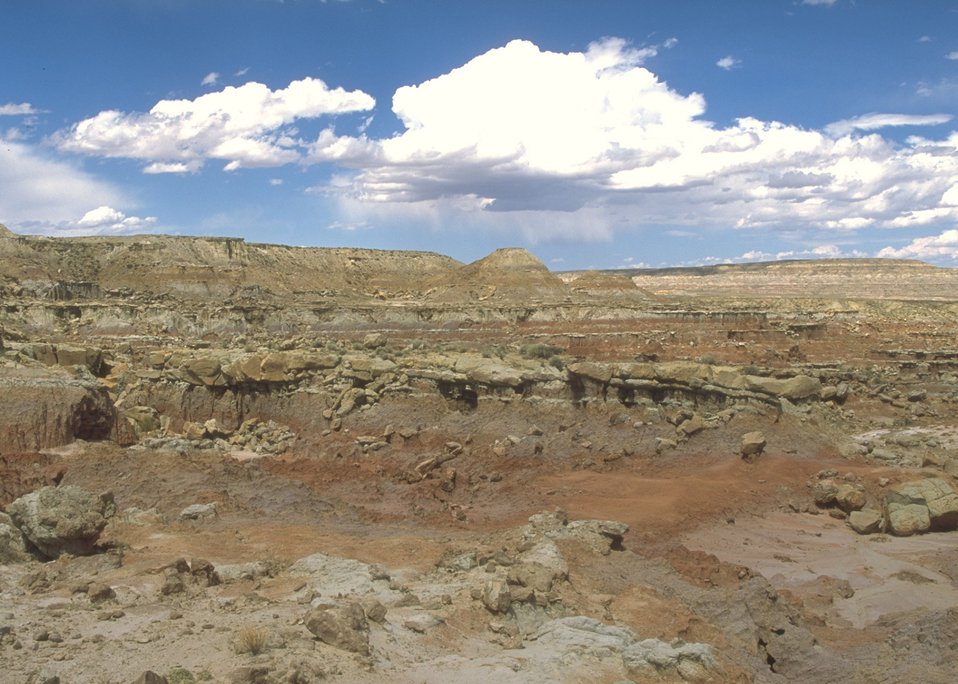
Gooseberry Interpretive Area, Worland Field Office.